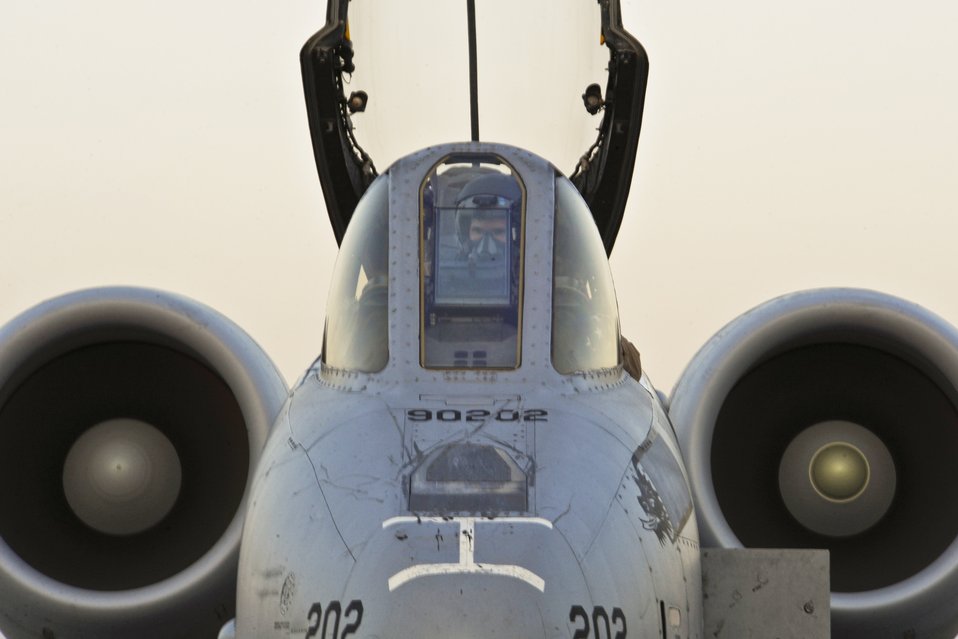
A-10 pilots prepare for mission

Capt. Richard Wilson, an A-10 Thunderbolt II pilot with the 354th Expeditionary Fighter Squadron, conducts his pre-flight inspection Dec. 27, 2009, at Kandahar Airfield, Afghanistan.